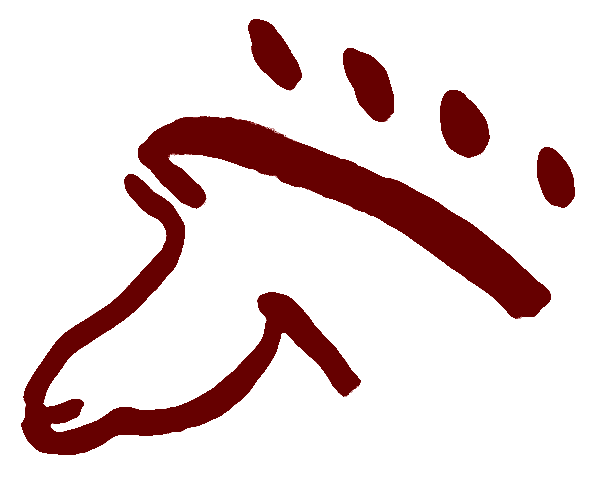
Caballo y pequeña serie de puntos del panel 44 en la Galería A (primer santuario) de la Cueva de La Pasiega, en el monte Castillo, localidad de Puente Viesgo (Cantabria, España)